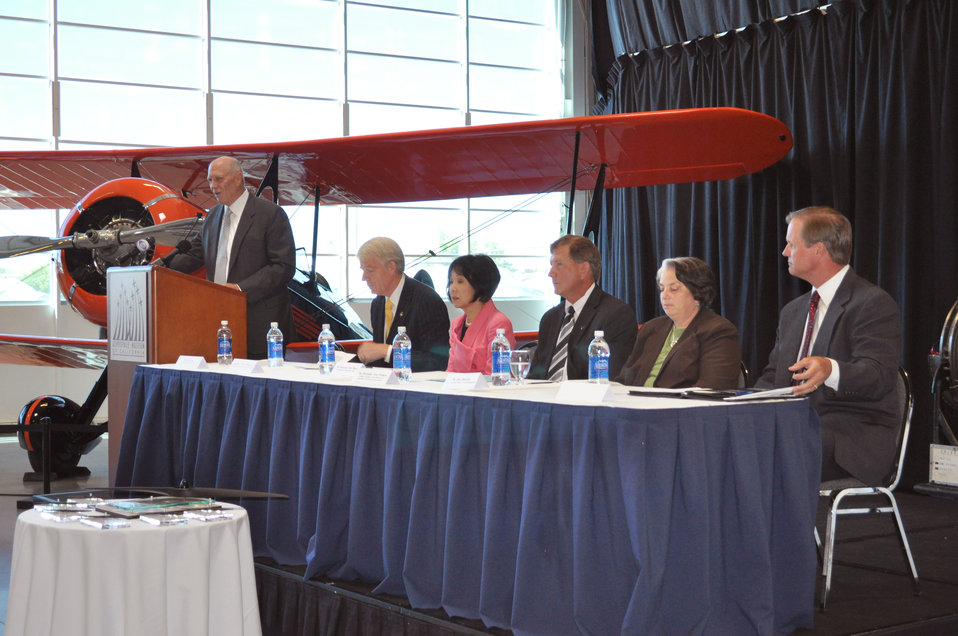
Land transferred to McClellan Business Park

Larry Kelly, president of the McClellan Business Park, provides his remarks Aug. 12, 2010, during a ceremony to transfer some 560 acres of the former McClellan Air Force Base in Sacramento, Calif., to Sacramento County officials. Those officials estimate that when fully developed the business park will host some 35,000 jobs and generate millions of dollars in tax revenue.